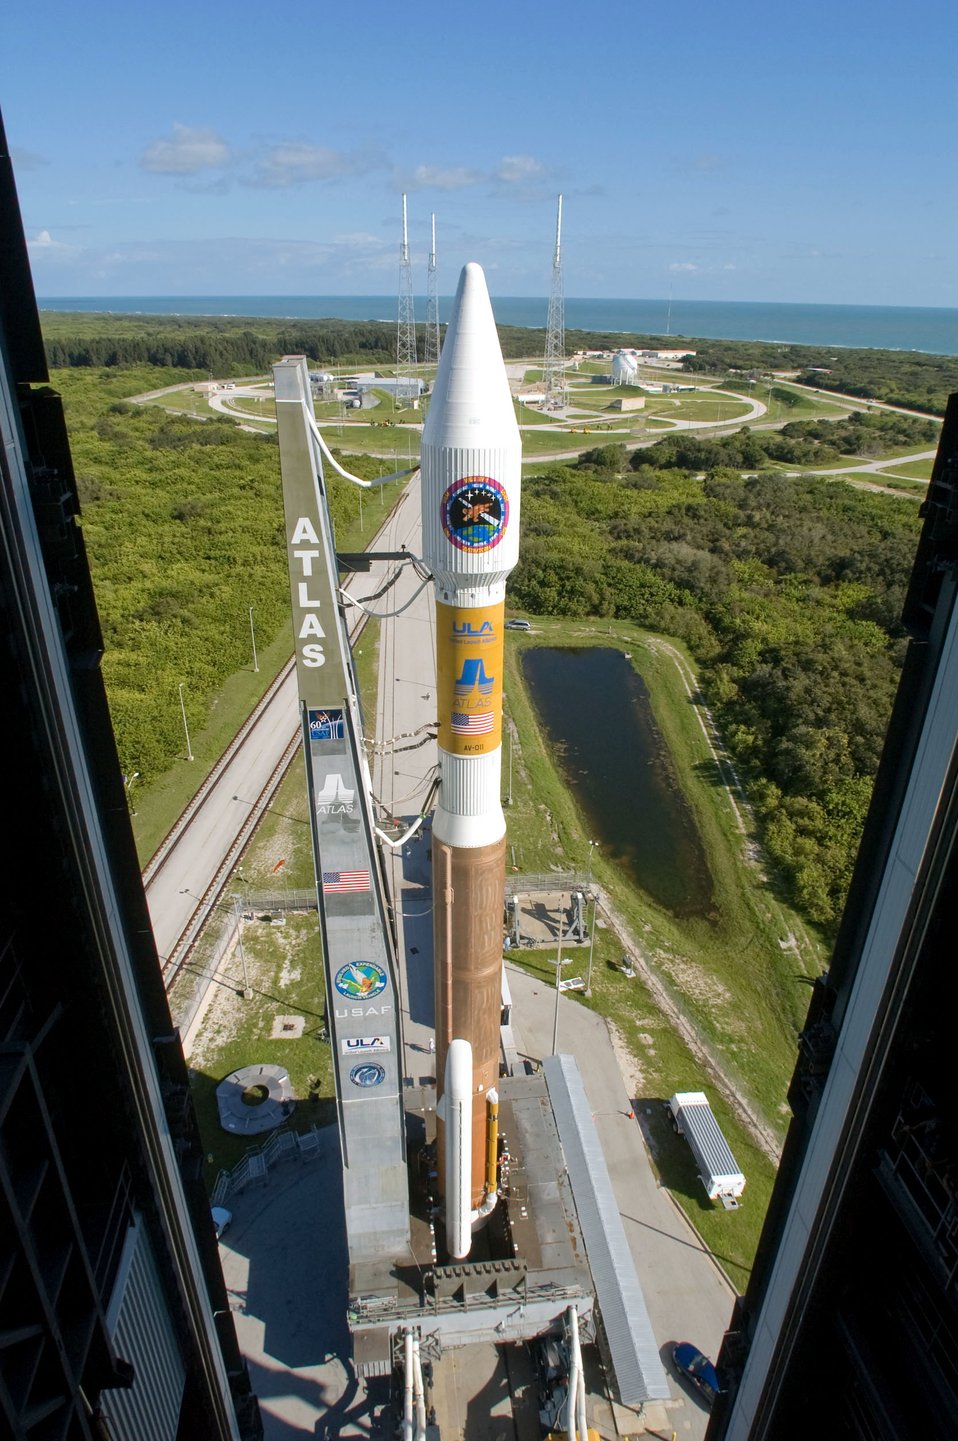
First next-generation communications satellite launches

The Atlas V rocket with the Wideband Global SATCOM satellite rolls out to Space Launch Complex 41 from the Vertical Integration Building Oct. 9 at Cape Canaveral Air Force Station, Fla. The Atlas V was rolled to the pad in preparation for the launch of the first WGS satellite, which took place Oct. 10.